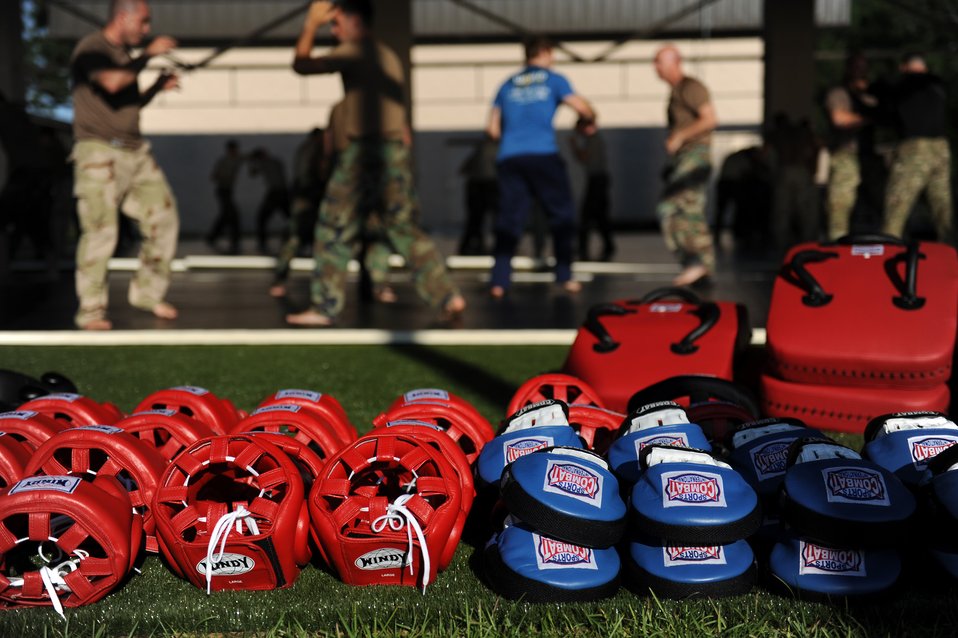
UFC fighter helps train battlefield Airmen

Airmen from the Special Tactics Training Squadron receive a combative class taught by Ultimate Fighting Championship Middleweight Alan Belcher June 8, 2010, at Hurlburt Field, Fla. The training prepared Airmen for hand-to-hand combat in the field.